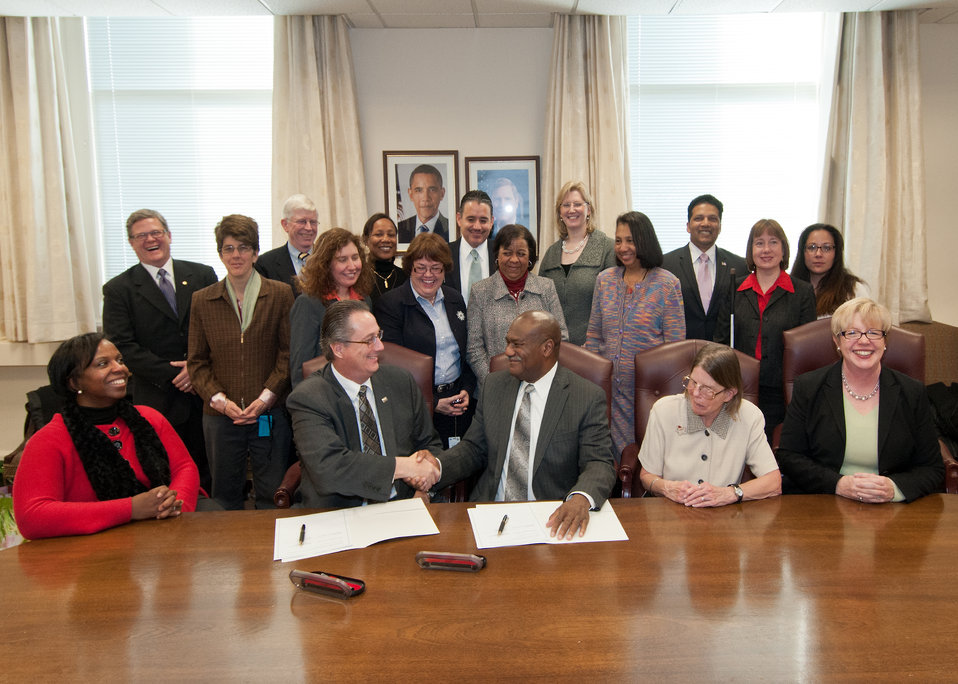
Stephen Wooderson (left), Chief Executive Officer, Council of State Administrators of Vocational Rehabilitation and Pearlie Reed (right), Assistant Secretary for Administration signed a Memorandum of Understanding with vocational rehabilitation groups at the United States Department of Agriculture in Washington, DC, Tuesday, December 13, 2011. Back row from left: John Evans, State of Washington Division of Vocational Rehabilitation, Thomas Finch, Department of Education, Rehabilitation Services Administration, Angela Williams, Section 508 Officer, Oscar Gonzales, Jr., Deputy Assistant Secretary for Administration, Alison Levy, Disability Employment Program Manager, Monshi Ramdass, Director, Recruitment, Diversity, Wellness and Worklife, Mediation, Disability and Veterans Employment Division, and Cassandra Shoffler, Management and Program Analyst, Office of Special Education and Rehabilitation Services, United States Department of Education. Second row from left: Mary Koehler, Council of State Administrators of Vocational Rehabilitation, Francesca Yabraian, Departmental Administration, Eleana Boyer, Virginia Department of Rehabilitation Services, Rita Martin, Council of State Administrators of Vocational Rehabilitation, Dr. Alma Hobbs, Deputy Assistant Secretary for Administration and Carol Dobak, Council of State Administrators of Vocational Rehabilitation. Seated from left: Carmen Jones, Senior Advisor, for Assistant Secretary Reed, Stephen Wooderson, Assistant Secretary Reed, Lynnae Ruttledge, Commissioner, Office of Special Education and Rehabilitation Services, United States Department of Education and Mary Evans, Director of Business Relations, Council of State Administrators of Vocational Rehabilitation.